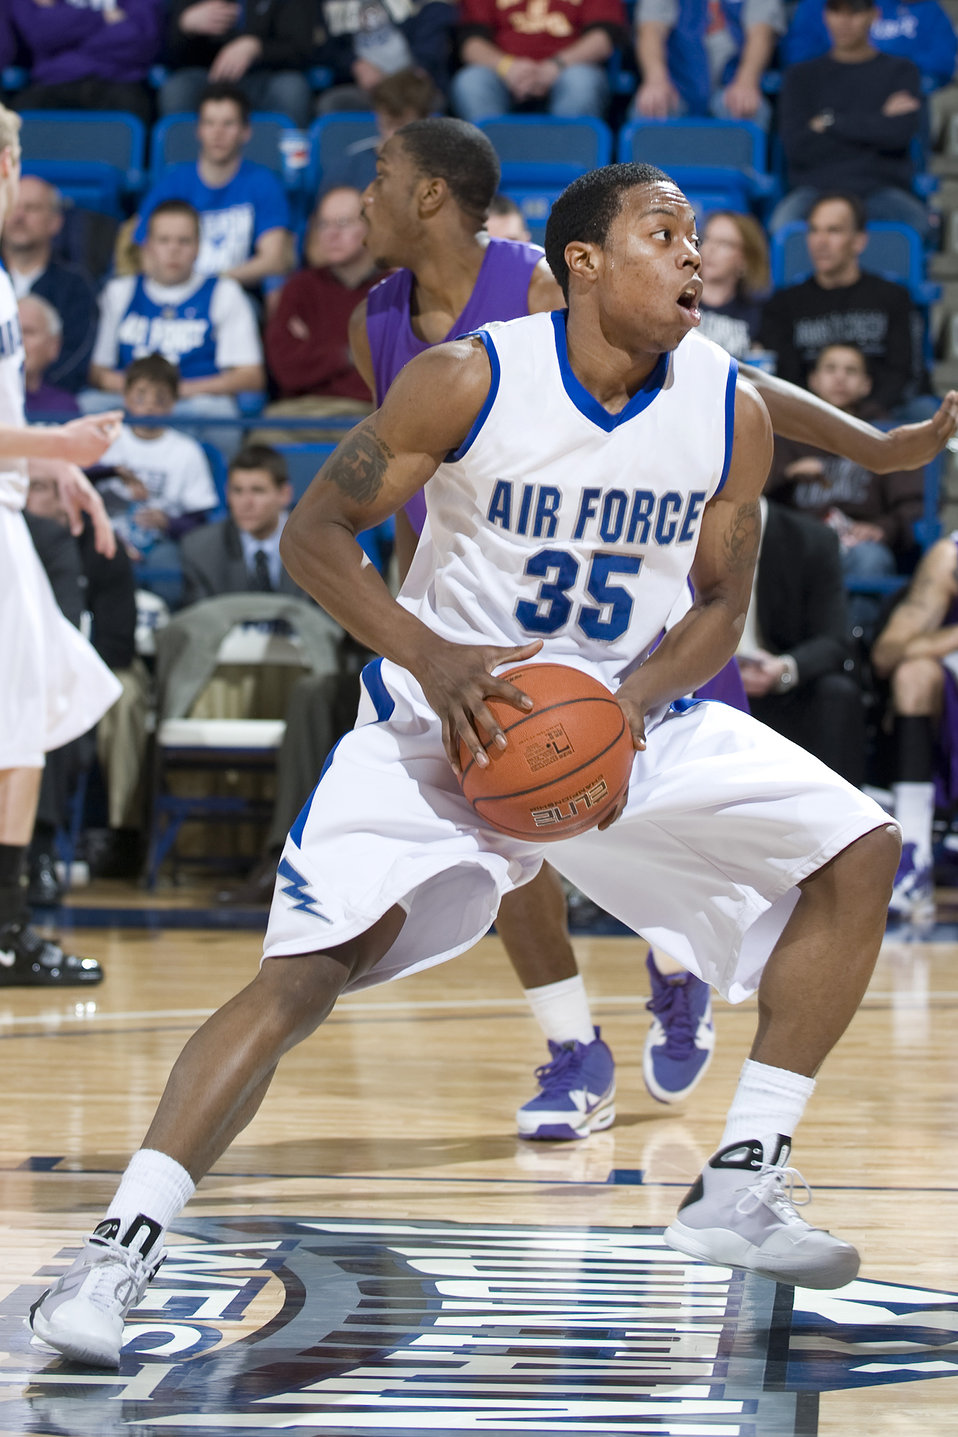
Horned Frogs surpass Falcons

Falcon junior guard Evan Washington drives for 2 of his team leading 16 points against the Texas Christian University Horned Frogs Feb. 6, 2010, at the Academy's Clune Arena. The Falcons fell short of their goal, losing to TCU by a score of 65-51.